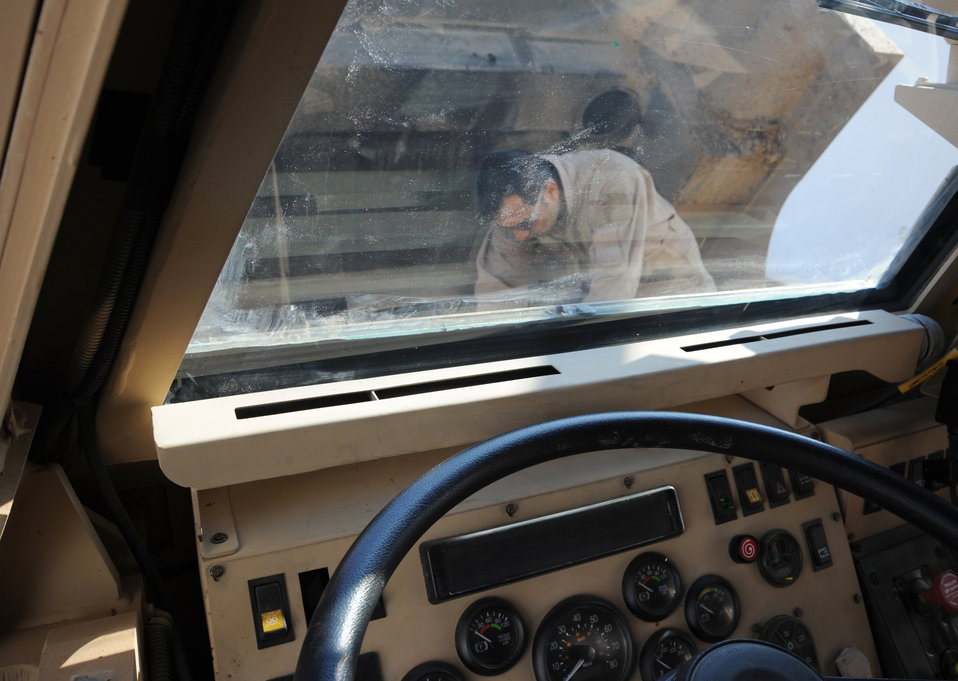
AF provides mechanical support to the joint warfighter

Staff Sgt. Jose Rodriguez, a 732nd Expeditionary Security Forces Squadron vehicle mechanic at Camp Taji, Iraq, performs maintenance on a mine resistant ambush protected vehicle Dec. 11, 2009. Five vehicle maintainers are attached to the unit to keep these life-saving vehicles operational. Sergeant Rodriguez is deployed from Cannon Air Force Base, N.M., and hails from San Antonio.